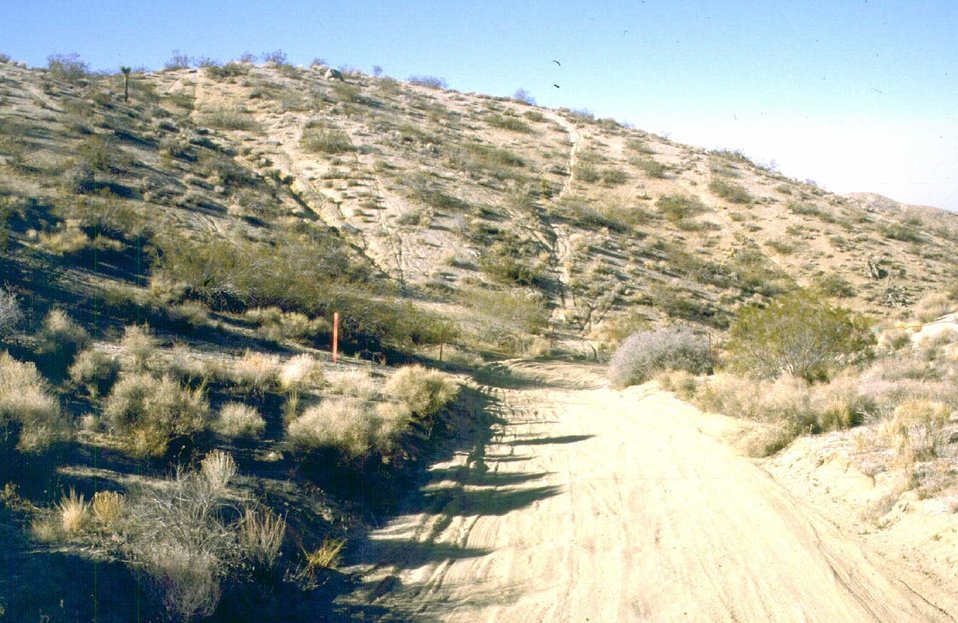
Hillside erosion caused by still active trespass routes